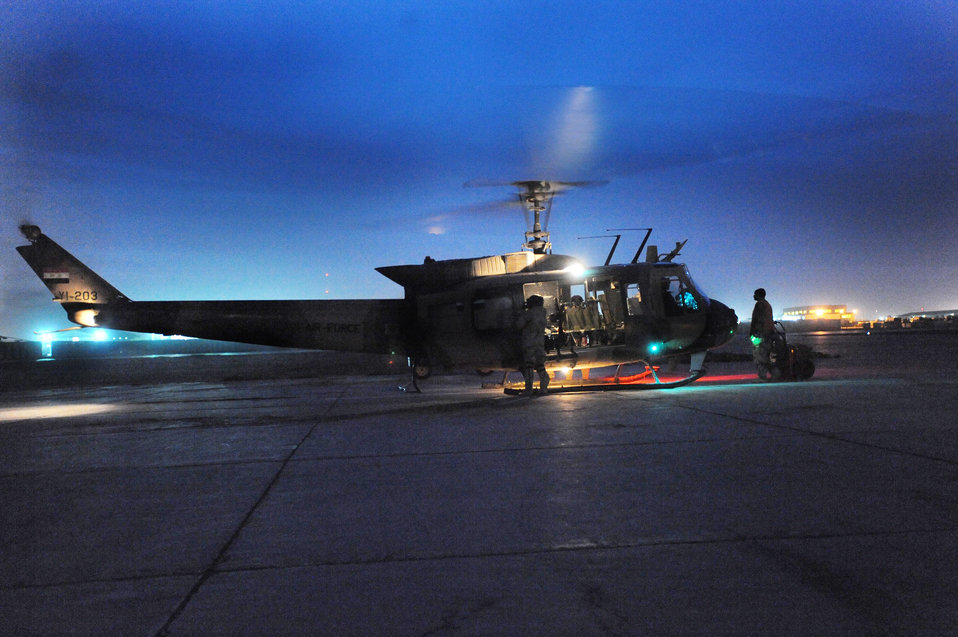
Airmen help Iraqi aircrew perform night missions using NVGs

Aircrews from the Iraqi 2nd Squadron begin their first night-vision goggle certification flight with assistance from 721st Air Expedition Advisory Squadron at Camp Taji, Iraq, Feb. 8.